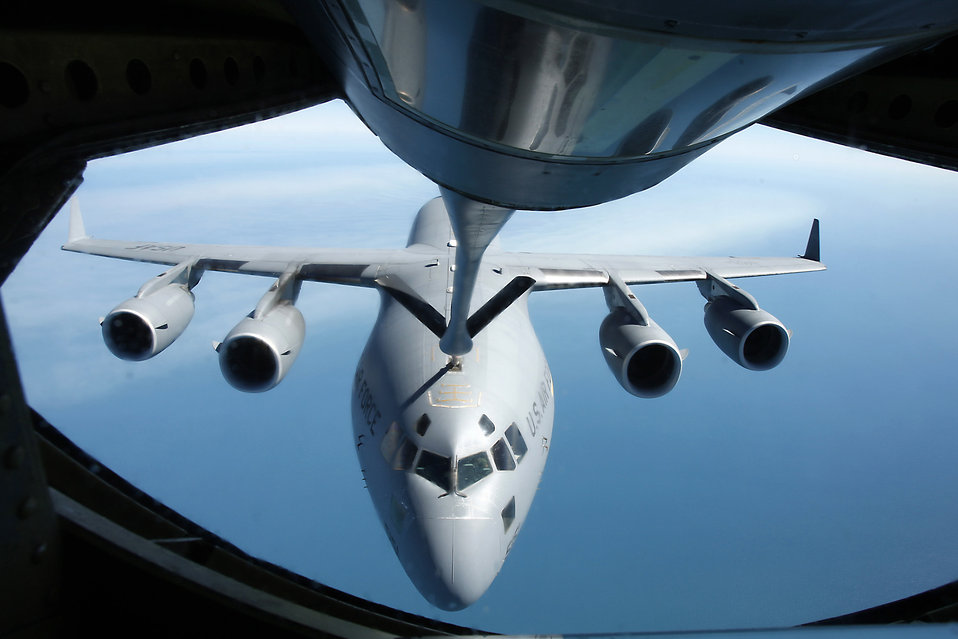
Exercise Talisman Saber concludes

A 909th Air Refueling Squadron KC-135 Stratotanker from Kadena Air Base, Okinawa, refuels a C-17 Globemaster III July 15 from Hickam Air Force Base, Hawaii. Talisman Saber 2009 is a bilateral command post and field-training exercise between U.S. and Australian forces that concluded July 25. The two-week exercise, held jointly by U.S. Pacific Command and the Australian Defence Force, focused on crisis-action planning and execution of contingency response operations.